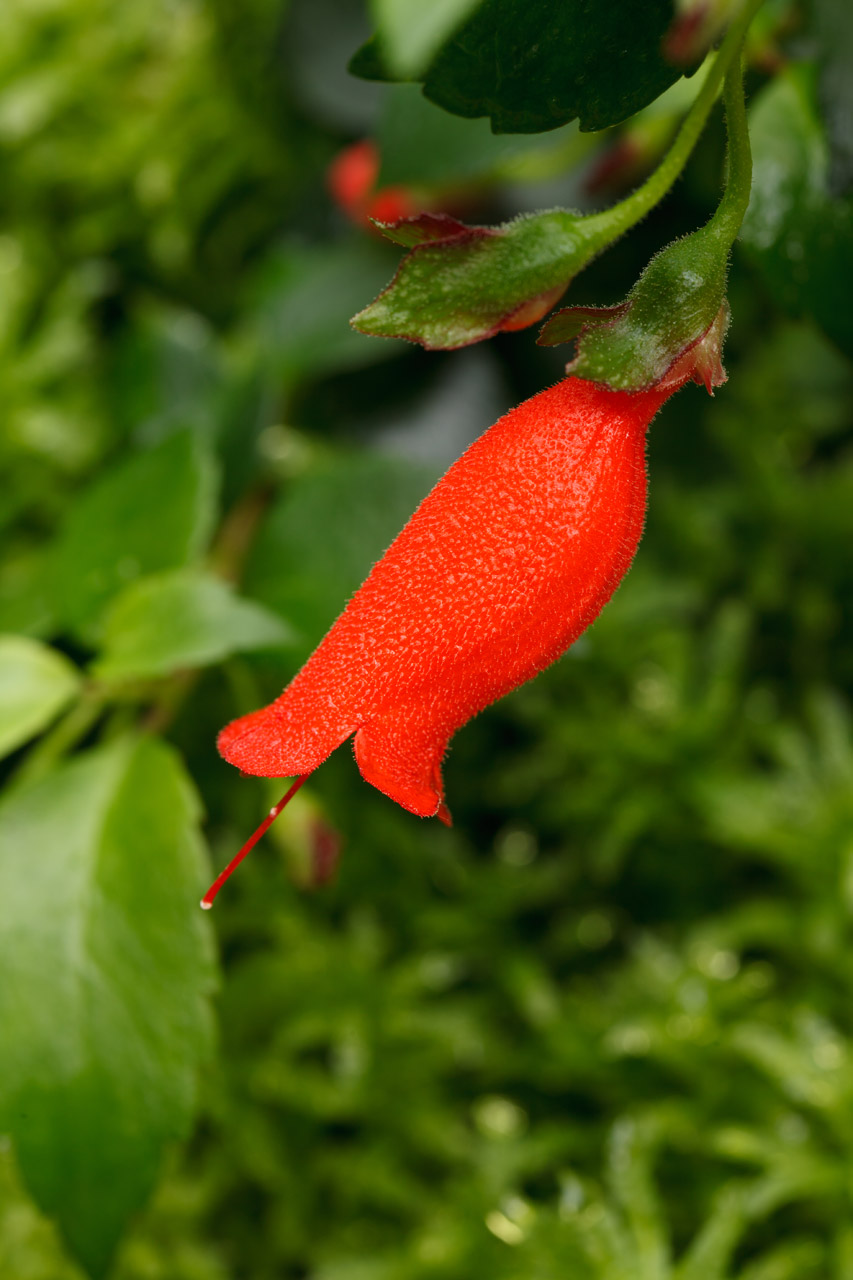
Macro red flower

Macro photo of a red flower on green background.